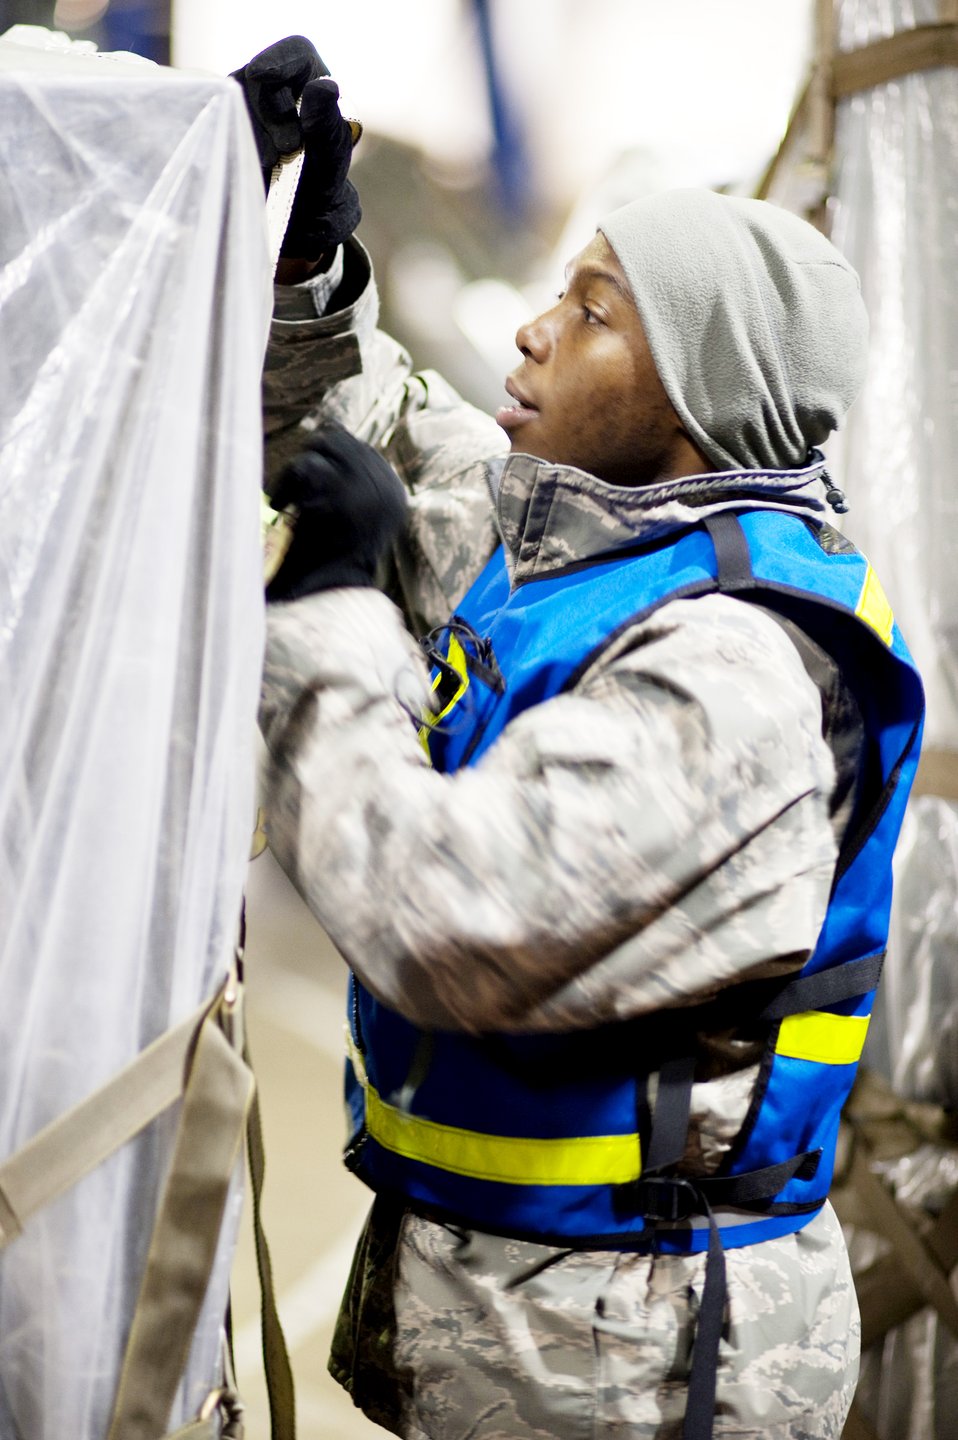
Misawa operations after dark

Staff Sgt. Larry Parker adjusts cargo netting on an aircraft pallet inside a hangar at Misawa Air Base, Japan, Jan. 28, 2010, during an operational readiness exercise. Sergeant Parker is an avionics production superintendent with the 35th Maintenance Squadron.